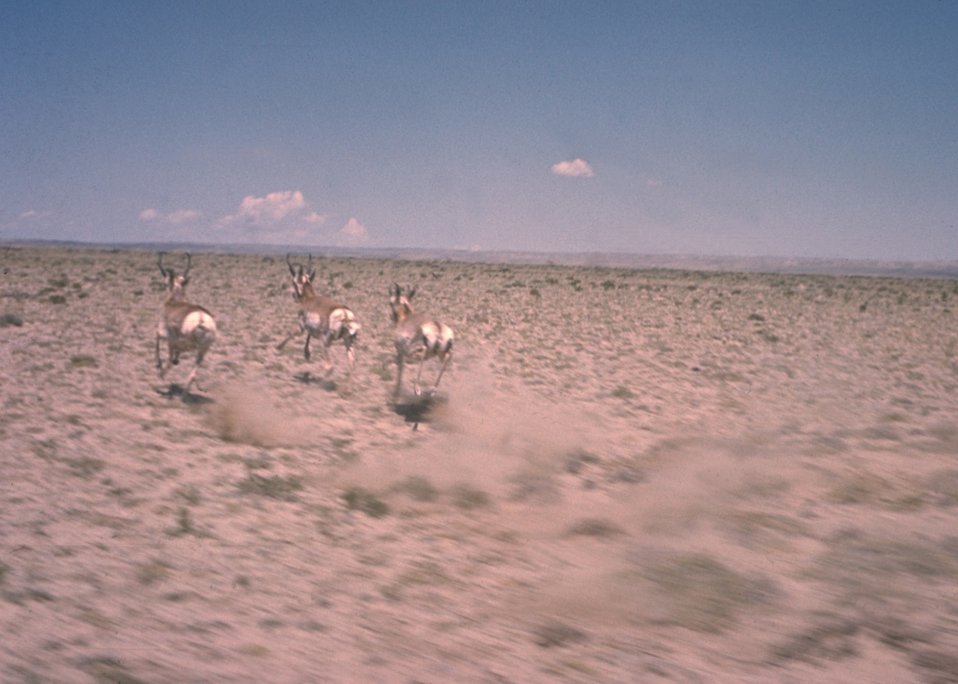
Antelope running along the prairie.